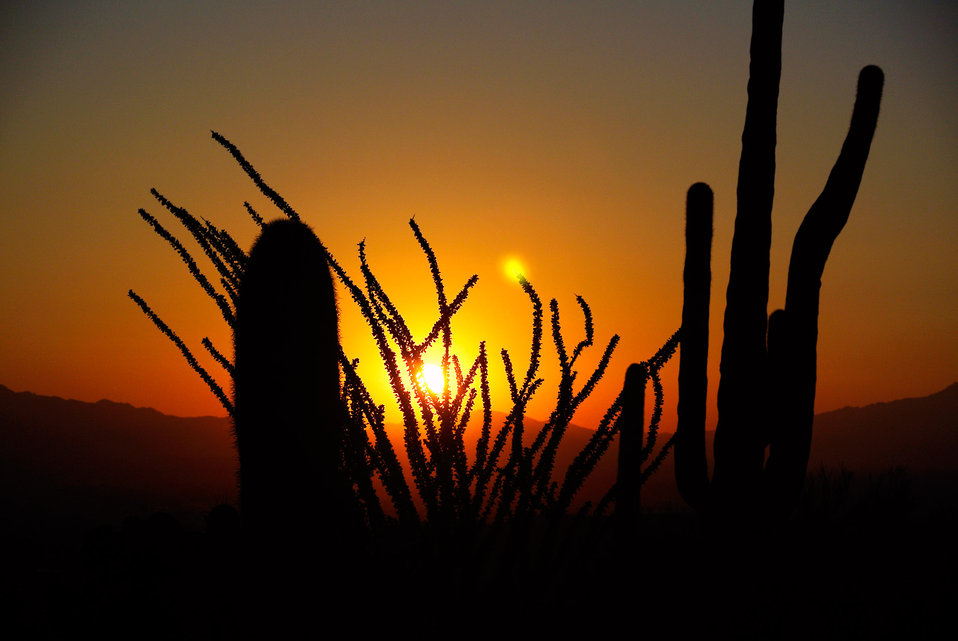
Cactus sunrise.